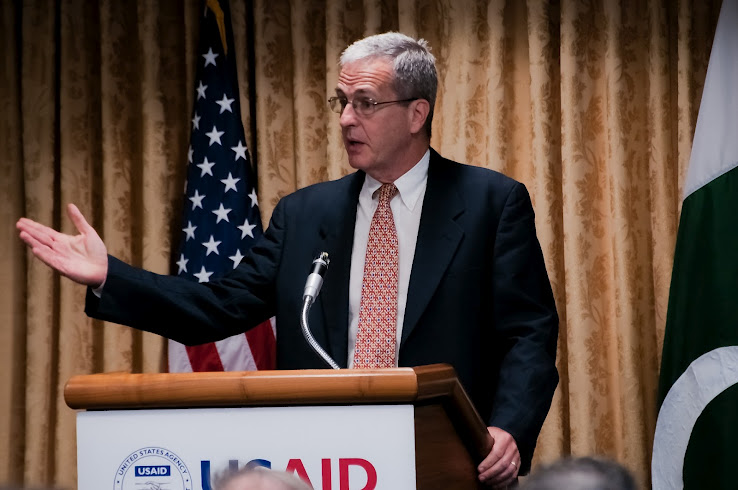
Jonathan Conly

WASHINGTON, D.C. – This week, Jonathan Conly was sworn in as the new U.S. Agency for International Development (USAID) Country Director for Pakistan. USAID Administrator Dr. Rajiv Shah presided over the ceremony and administered the oath in the presence of Mr. Conly’s family, friends, and colleagues, as well as members of the Pakistani-American community and the Pakistan Embassy’s Deputy Chief of Mission, Dr. Asad Majeed Khan.